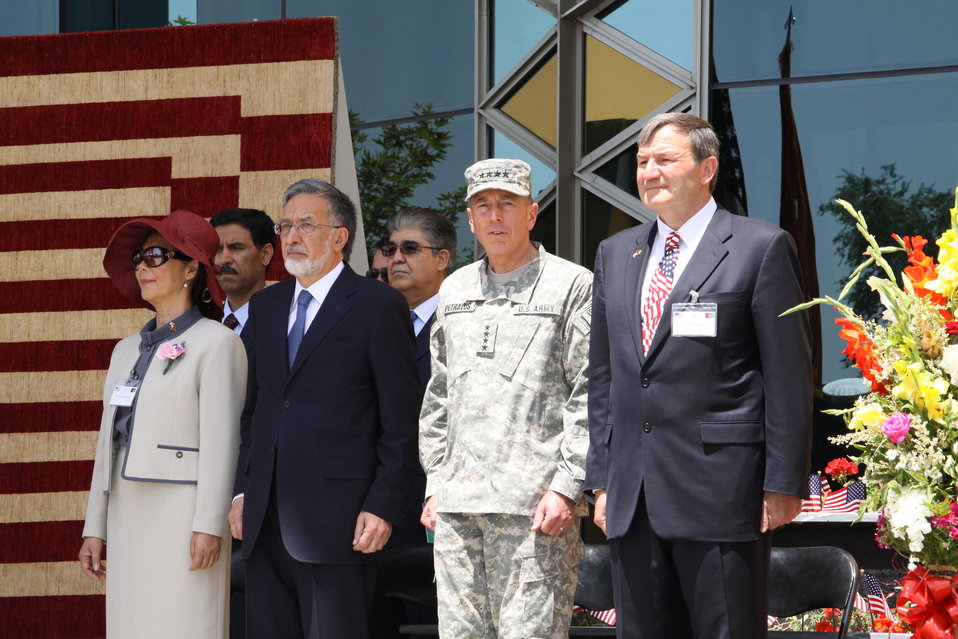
Kabul Official July 4th Celebration